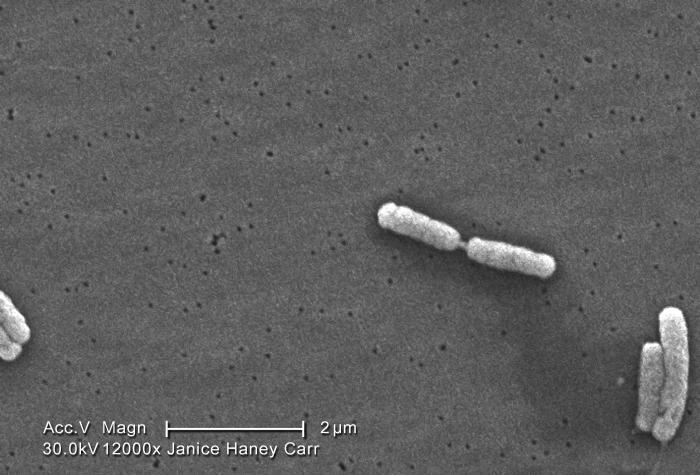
Under a high magnification of 12000X, this scanning electron micrograph (SEM) depicted six Gram-negative Legionella pneumophila bacteria. Note that you're able to see a flagella emanating from the lower right organisms. Also note that one bacteria is about to become two separate entities, as they were finishing the process of cell division. Please see PHIL 11092 through 11152 for additional SEMs of these organisms, specifically PHIL 11110 for a colorized version of this image, which better illuminates the flagella.